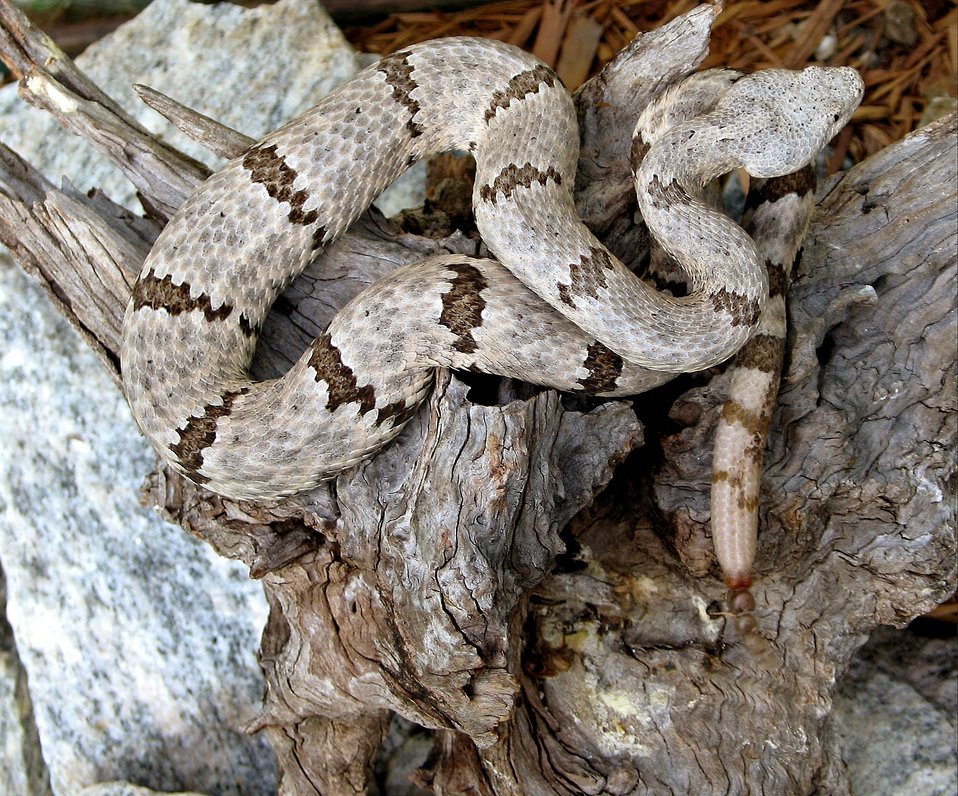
This 2005 image depicted a 'mottled rock' rattlesnake, Crotalus lepidus lepidus, a small banded rattlesnake species that along with the transpecos copperhead, and black tailed rattlesnake, is found only in the extreme southwestern quadrant of the hurricane prone area of the United States (Tennant 1998), which is of importance to those living in these regions, and first-responders offering aid to those affected by such a disaster. Rock rattlesnakes inhabit the limestone canyons, rock outcroppings, bluffs and mountain woodlands throughout the Transpecos region of Texas, and a small portion of southeastern new Mexico southward through an extensive area of Mexico (Price, Tennant 1998).